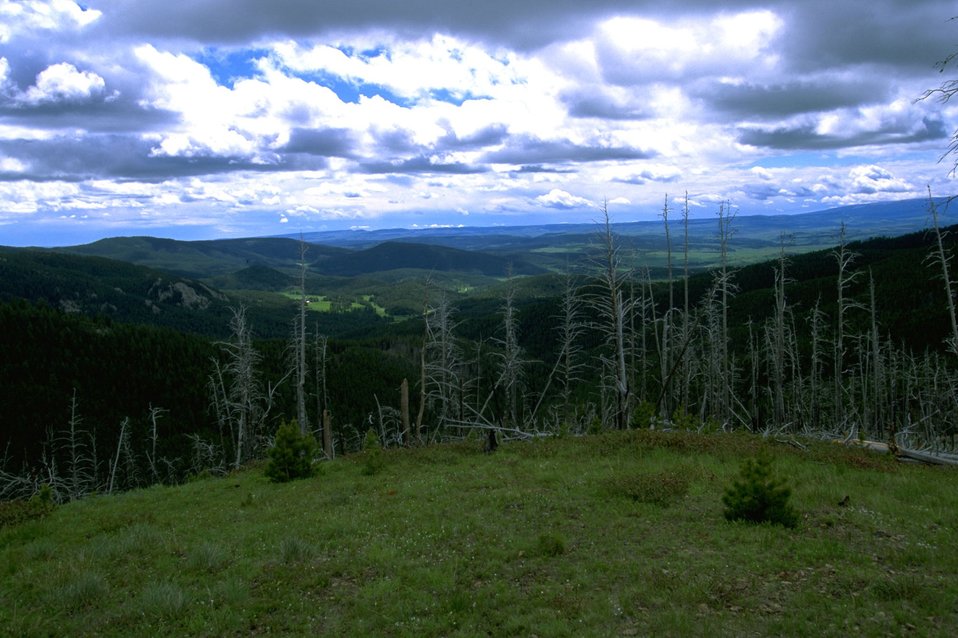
Clouds hanging over the Judith Mountains